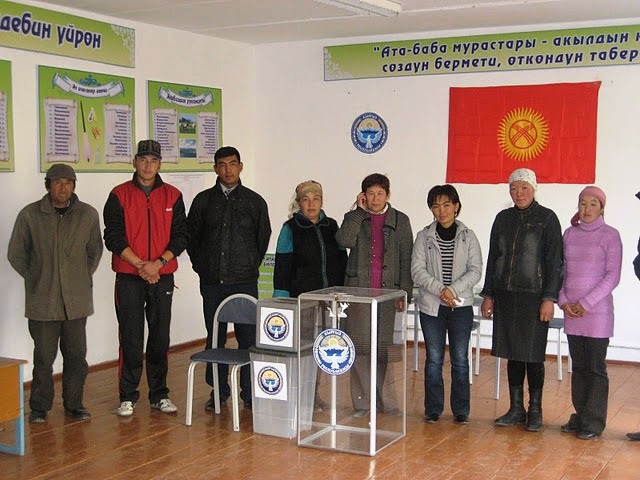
Kyrgyz Election Volunteers Pose for a Photo

Kyrgyz election volunteers in Kyrgyzstan pose for a photo in October 2010.